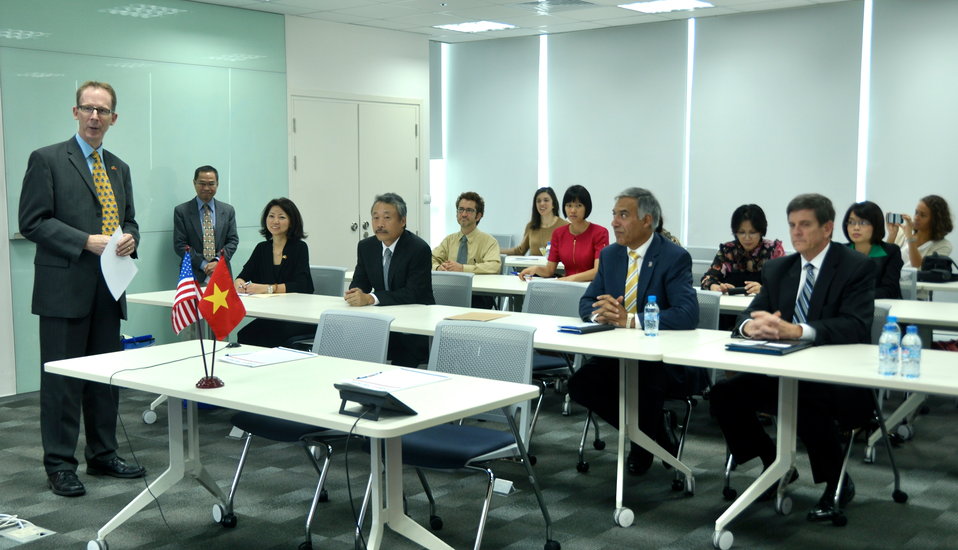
USAID, San Jose State University and Cisco Systems sign the Social Work Education Enhancement Program MOU

Hanoi, November 13, 2013.